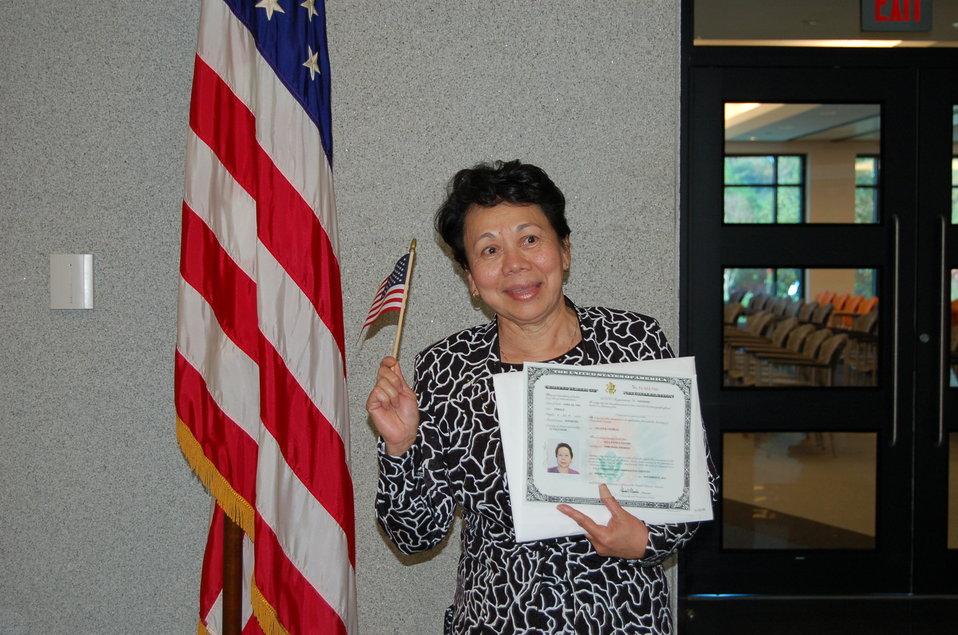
New Citizens